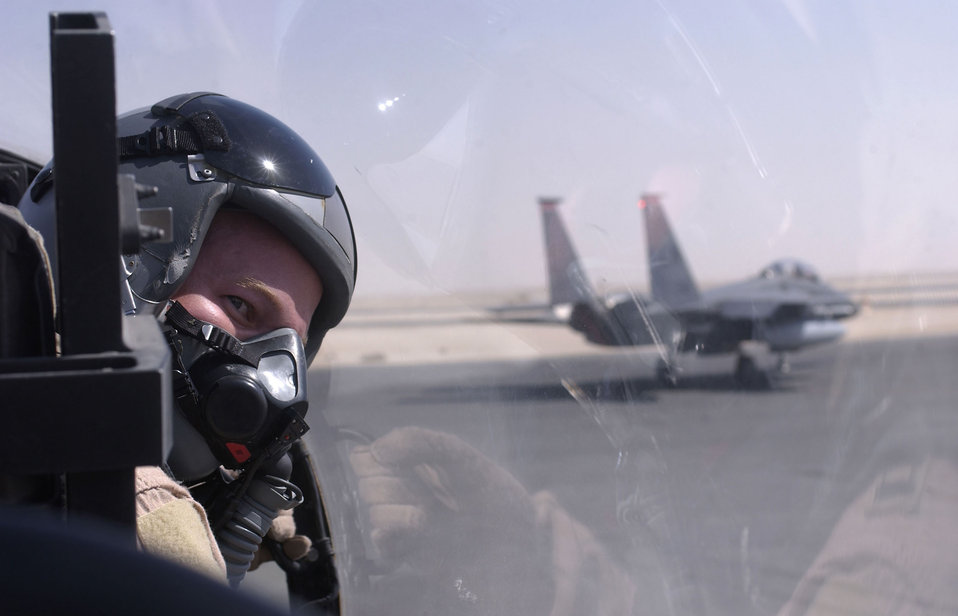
Traffic

SOUTHWEST ASIA -- Maj. Grant